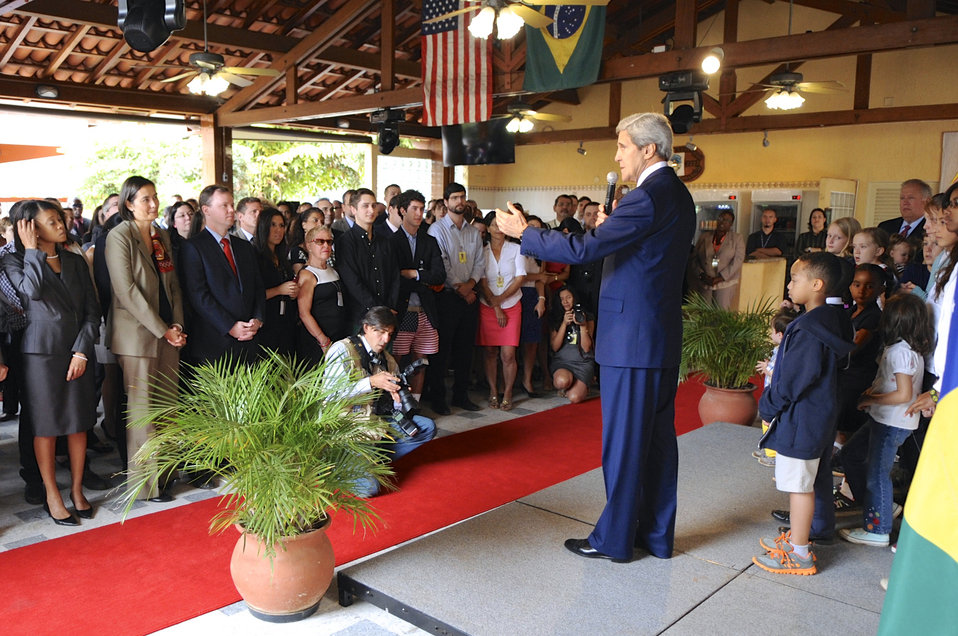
Secretary Kerry Addresses the Staff of Embassy Brasilia

U.S. Secretary of State John Kerry, joined on the stage by the child of staff members, addresses locally-hired and U.S.-deployed workers during a visit to the U.S. Embassy in Brasilia, Brazil, on August 13, 2013.